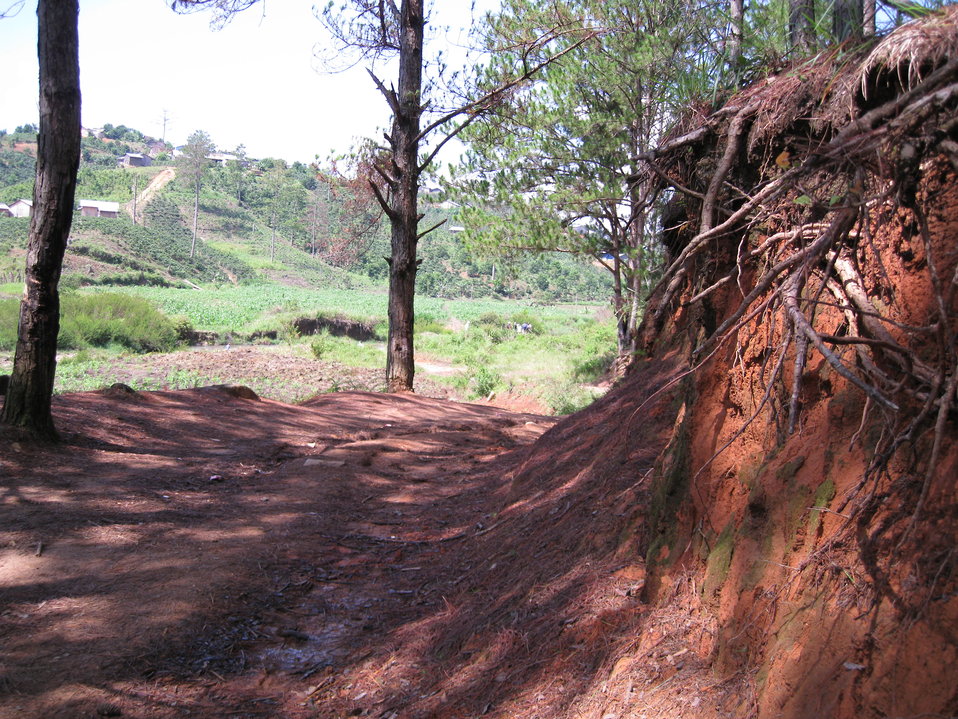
Forests in Vietnam